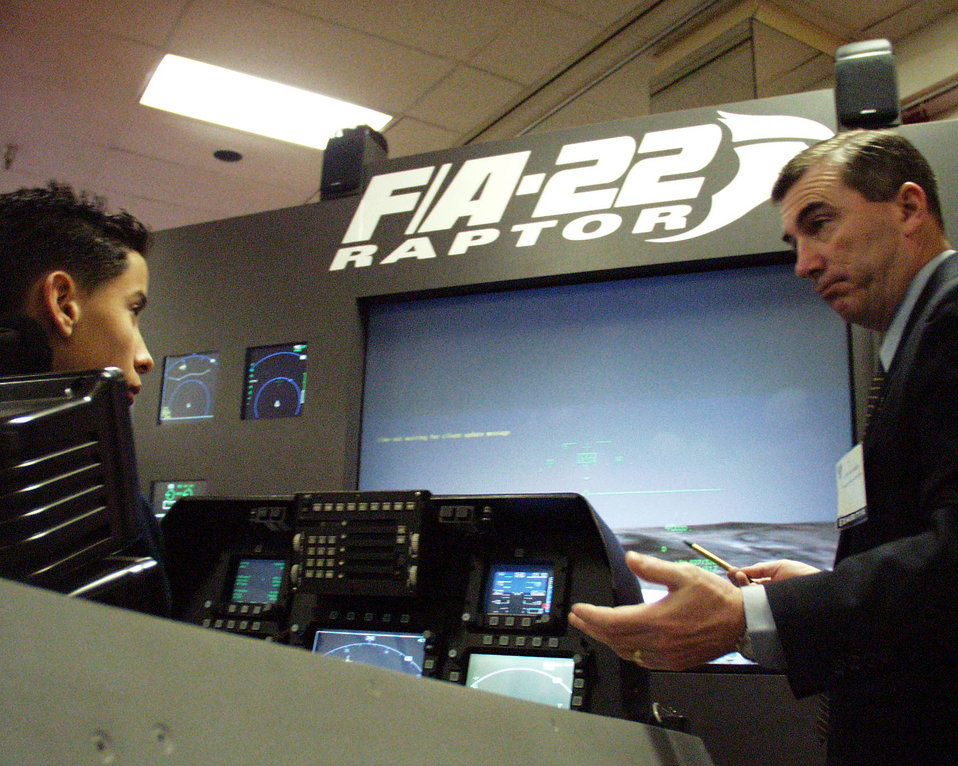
F/A-22 undergoes tests, evaluations

LAKE BUENA VISTA, Fla. -- Steve Callaghan (right) instructs an Air Force ROTC cadet on how to operate the F/A-22 Raptor flight simulator display at the annual Air Warfare Symposium in Lake Buena Vista, Fla., on Feb. 14. Callaghan is the Lockheed Martin Navy Joint Strike Fighter programs director.